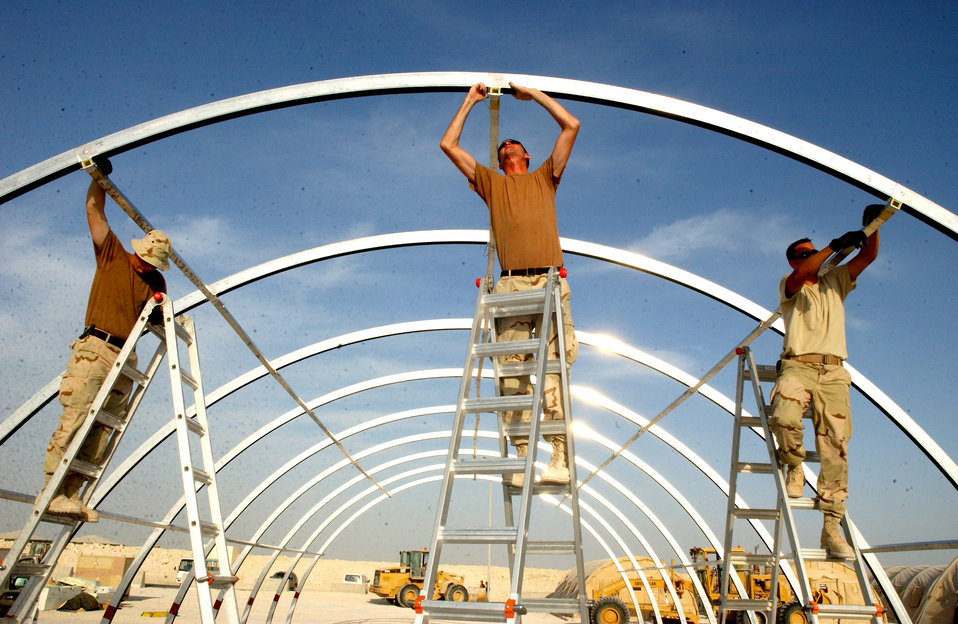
Shelter cover

SOUTHWEST ASIA (AFPN) -- (From left) Senior Airman Aleksey Starovoytov, Airman 1st Class Ryan Watkins and Airman 1st Class Steven Kilian work to connect a frame for a shelter cover.